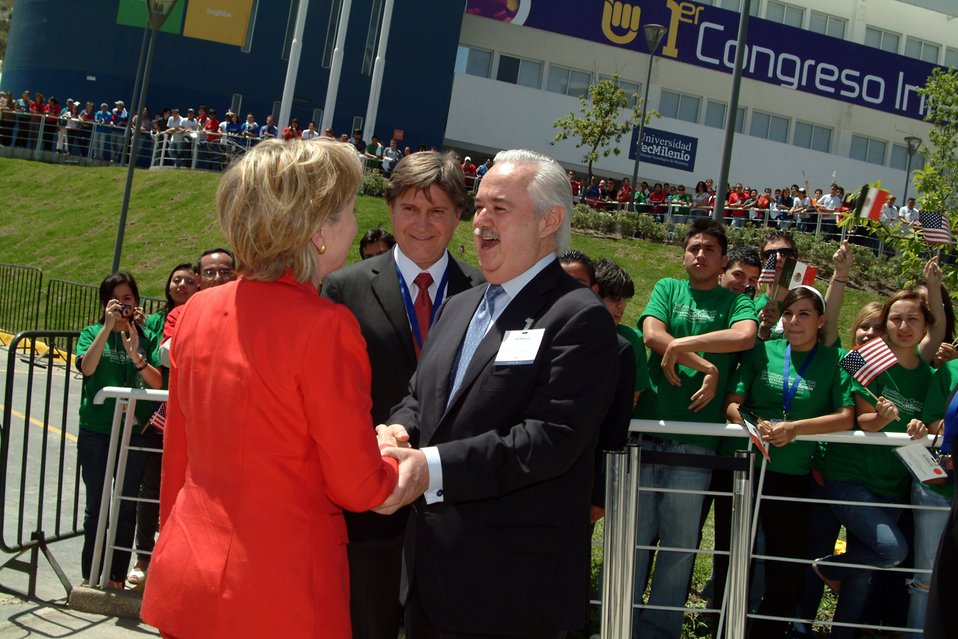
Secretary Clinton at TecMilenio University

U.S. Secretary of State Hillary Rodham Clinton is greeted at TecMilenio University by Carlos Cruz Limn, Vicerrector of Innovation and Development of ITESM and, Lorenzo Zambrano, President of Board of Directors of ITESM in Monterrey, Mexico March 26, 2009.